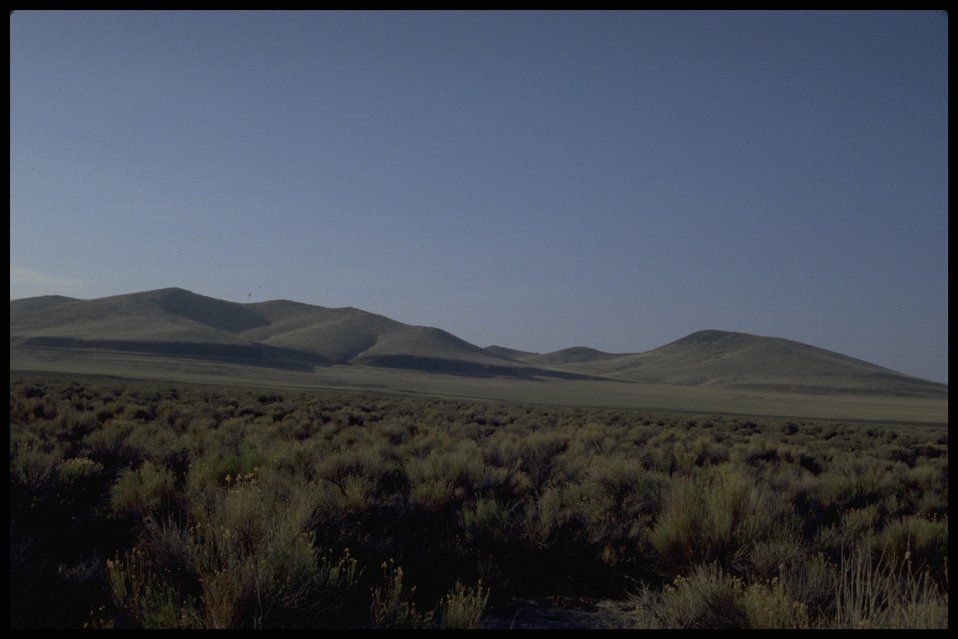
Scenic view of desert, Lakeview District.